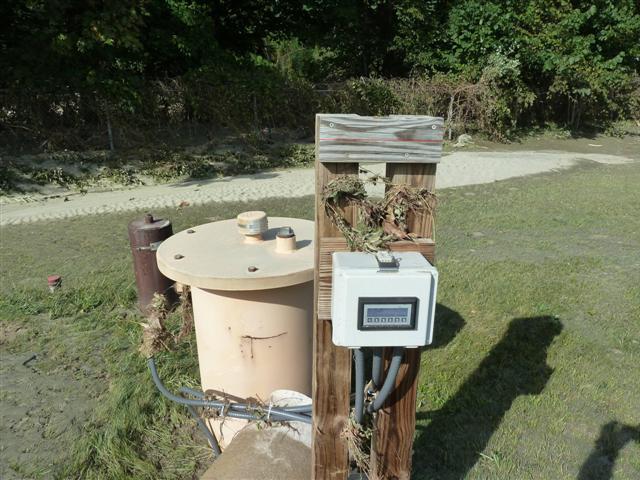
Damage at White River NFH - Bethel, VT

Damage to well 3 controls at White River NFH